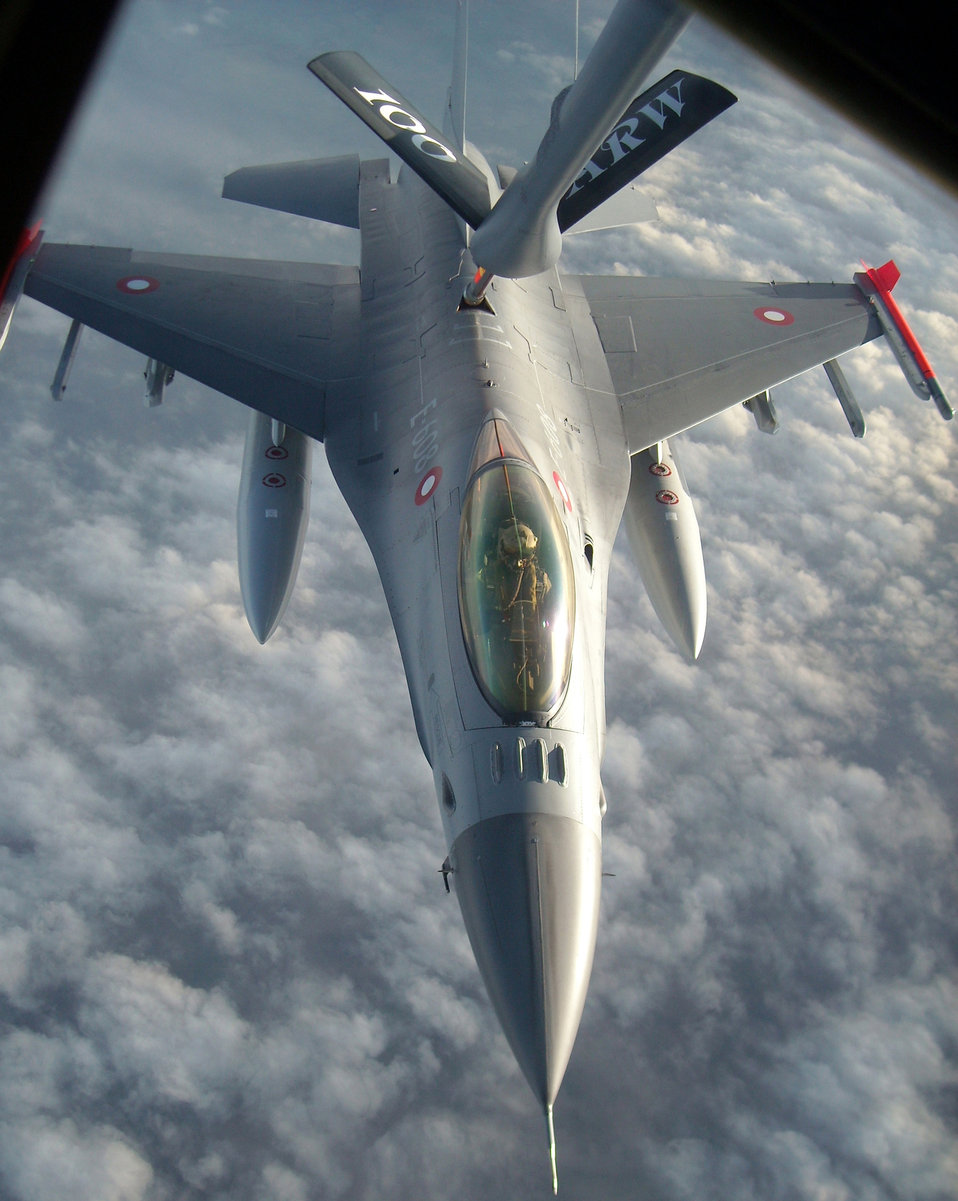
Refueling lifeline of U.S., NATO air ops

A Royal Danish air force F-16 Fighting Falcon receives fuel Dec. 8, 2009 as Chief Master Sgt. Christopher Powell commands the operation. The Danish F-16 was one of 30 performing their semi-annual aerial refueling training. Chief Powell is a 100th Operations Group boom operator.